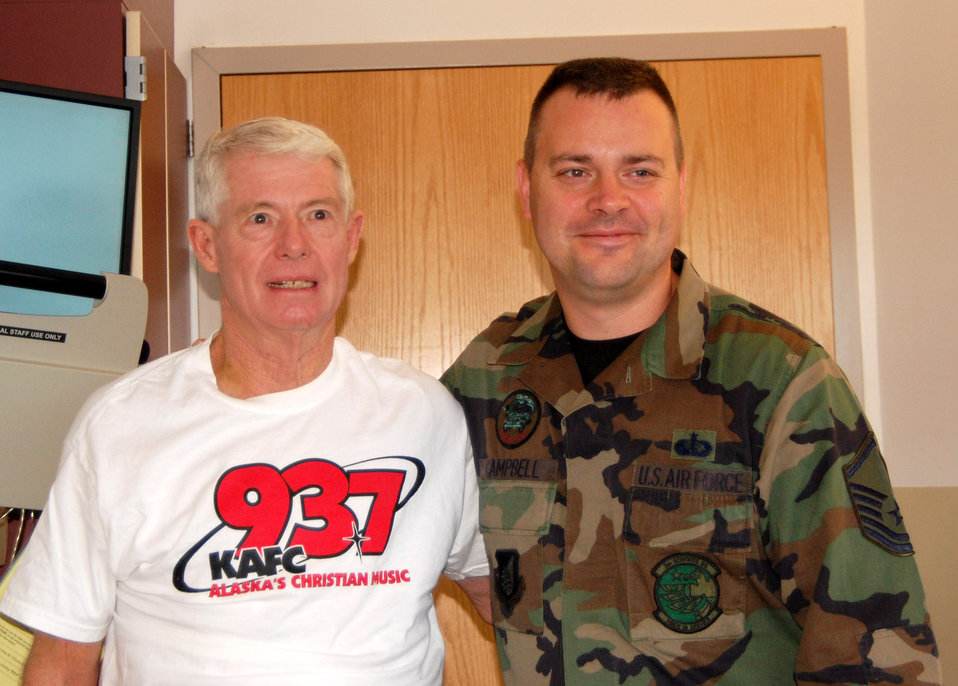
Training helps Elmendorf Airman save man?s life

David Ira shares a moment with Master Sgt. Robert Campbell, who saved Mr. Ira's life with CPR. Sergeant Campbell is a member of the 3rd Services Squadron at Elmendorf Air Force Base, Alaska.